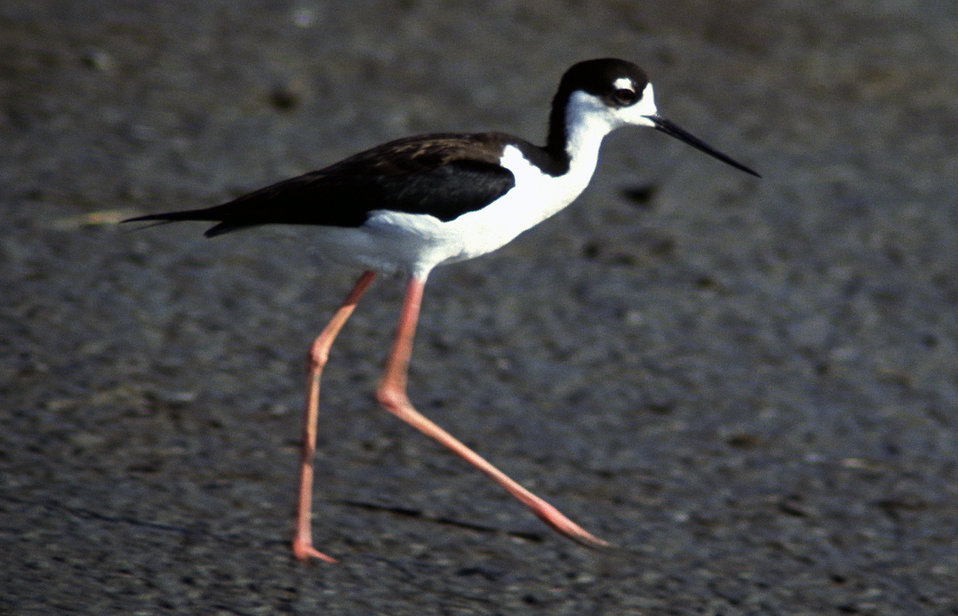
Black-Necked Stilt

Pt. Mahon, DE.